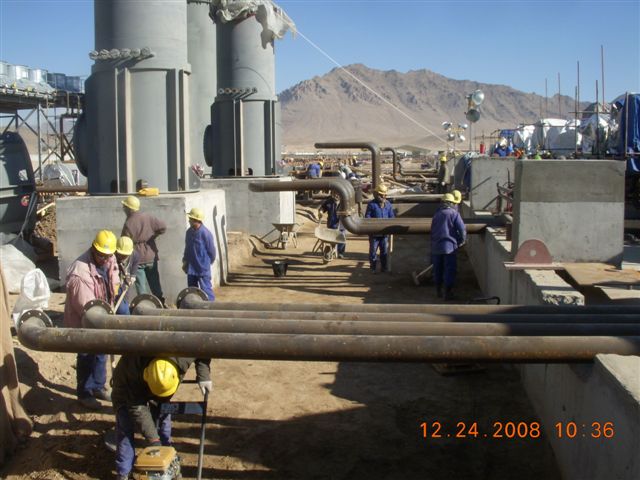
105 MW construction